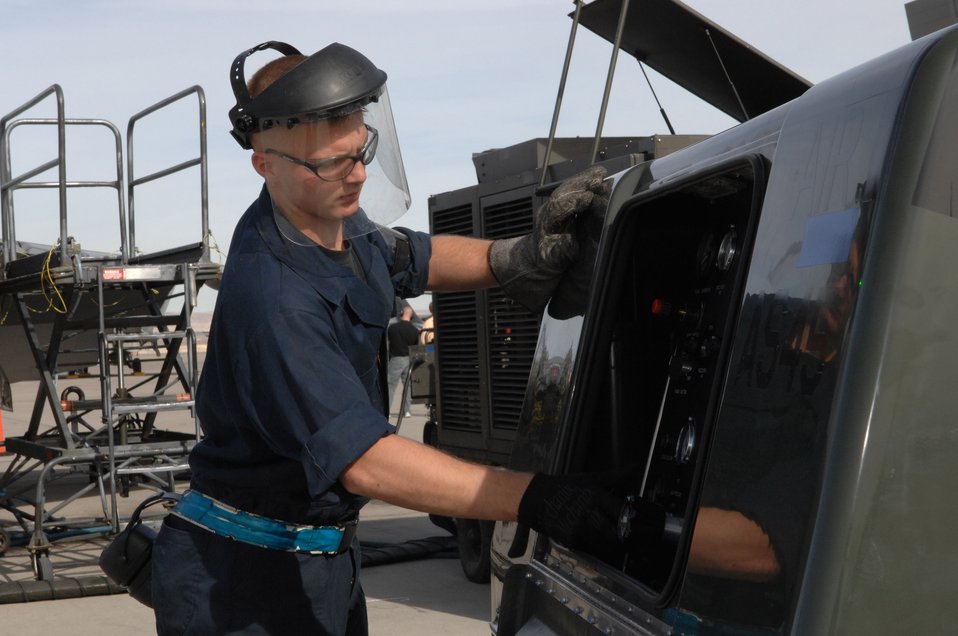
Raptors invade Nevada

Senior Airman Seth Klepper services a stored energy system during Red Flag 07-02 Feb. 6 at Nellis Air Force Base, Nev. Red Flag sharpens aircrews' warfighting skills in realistic combat situations. The F-22s will be flying missions during the day and night to the nearby Nevada Test and Training Range where they will simulate an air war. The Air Force and Navy, along with military forces from Australia and the United Kingdom, are participating in Red Flag. Airman Klepper is a tactical aircraft maintenance specialist with the 94th Fighter Squadron at Langley Air Force Base, Va. This is the first deployment to Red Flag for the 94th FS with the F-22.